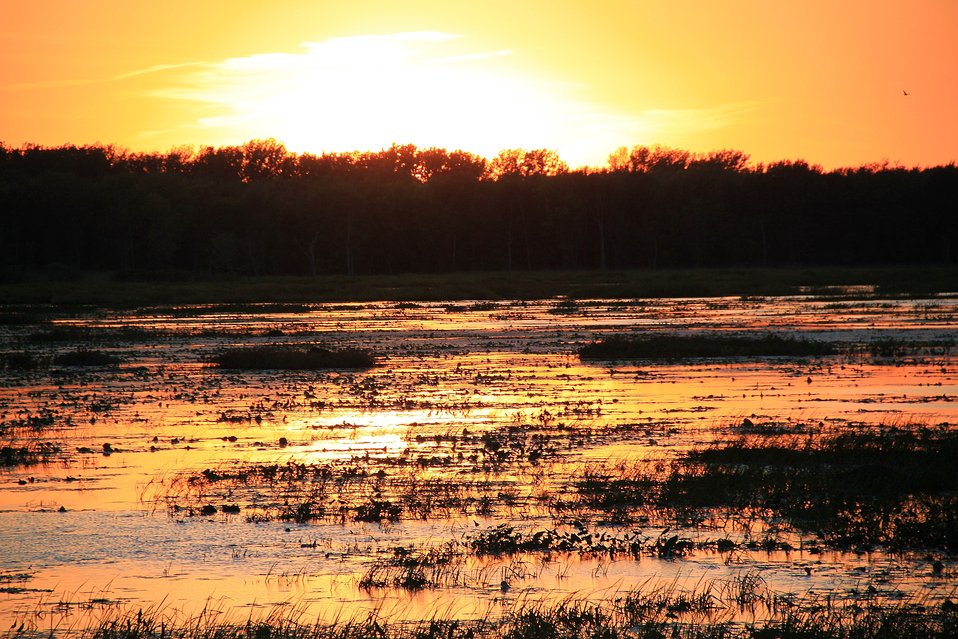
Sunset over Cranberry Pool September 2012

MIssisquoi National Wildlife Refuge wetlands